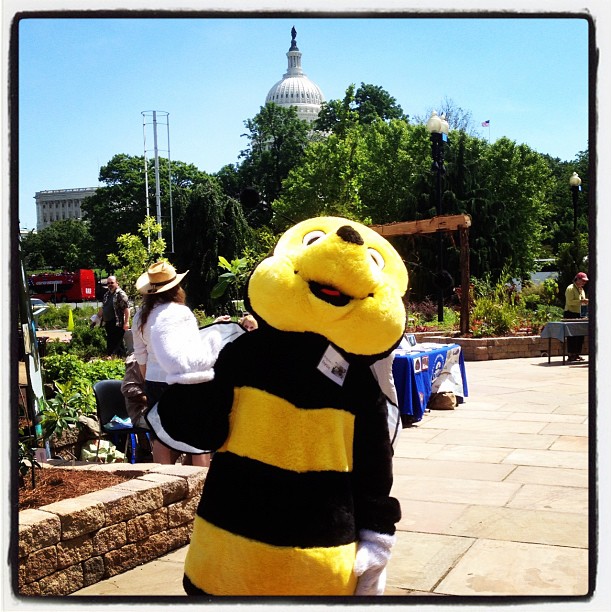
Frankie the Bee of the US Forest Service educates about endangered animals and plants at US Botanic Garden.